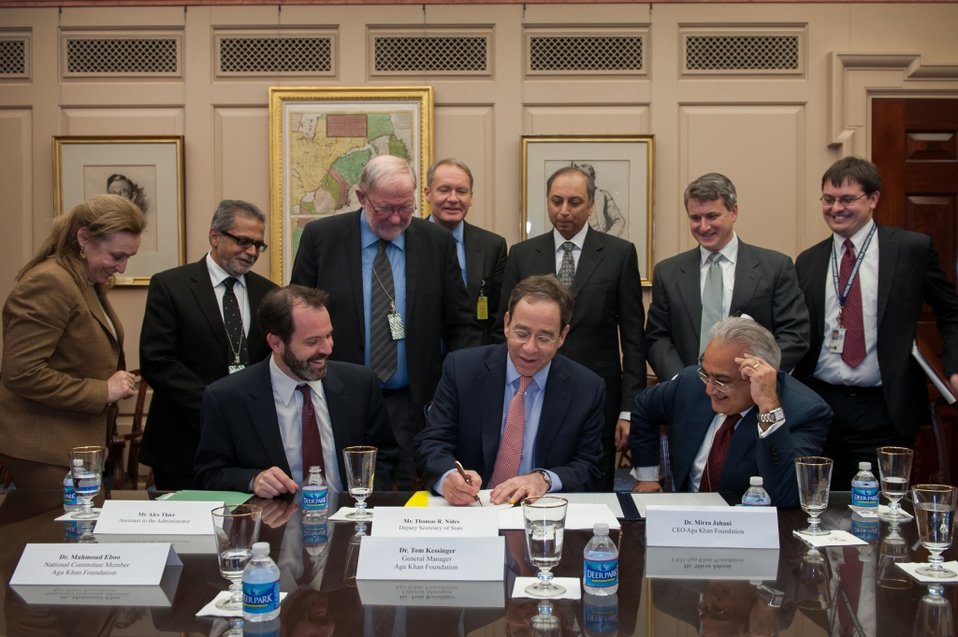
Deputy Secretary Nides Signs a Memorandum of Understanding

Deputy Secretary of State Thomas Nides signs a memorandum of understanding on behalf of the U.S. Department of State and the U.S. Agency for International Development with the Aga Khan Foundation that will help establish the first investment fund in Badakhshan, Afghanistan, to invest in social development projects, at a private ceremony at the U.S. Department of State in Washington, D.C., February 8, 2013.